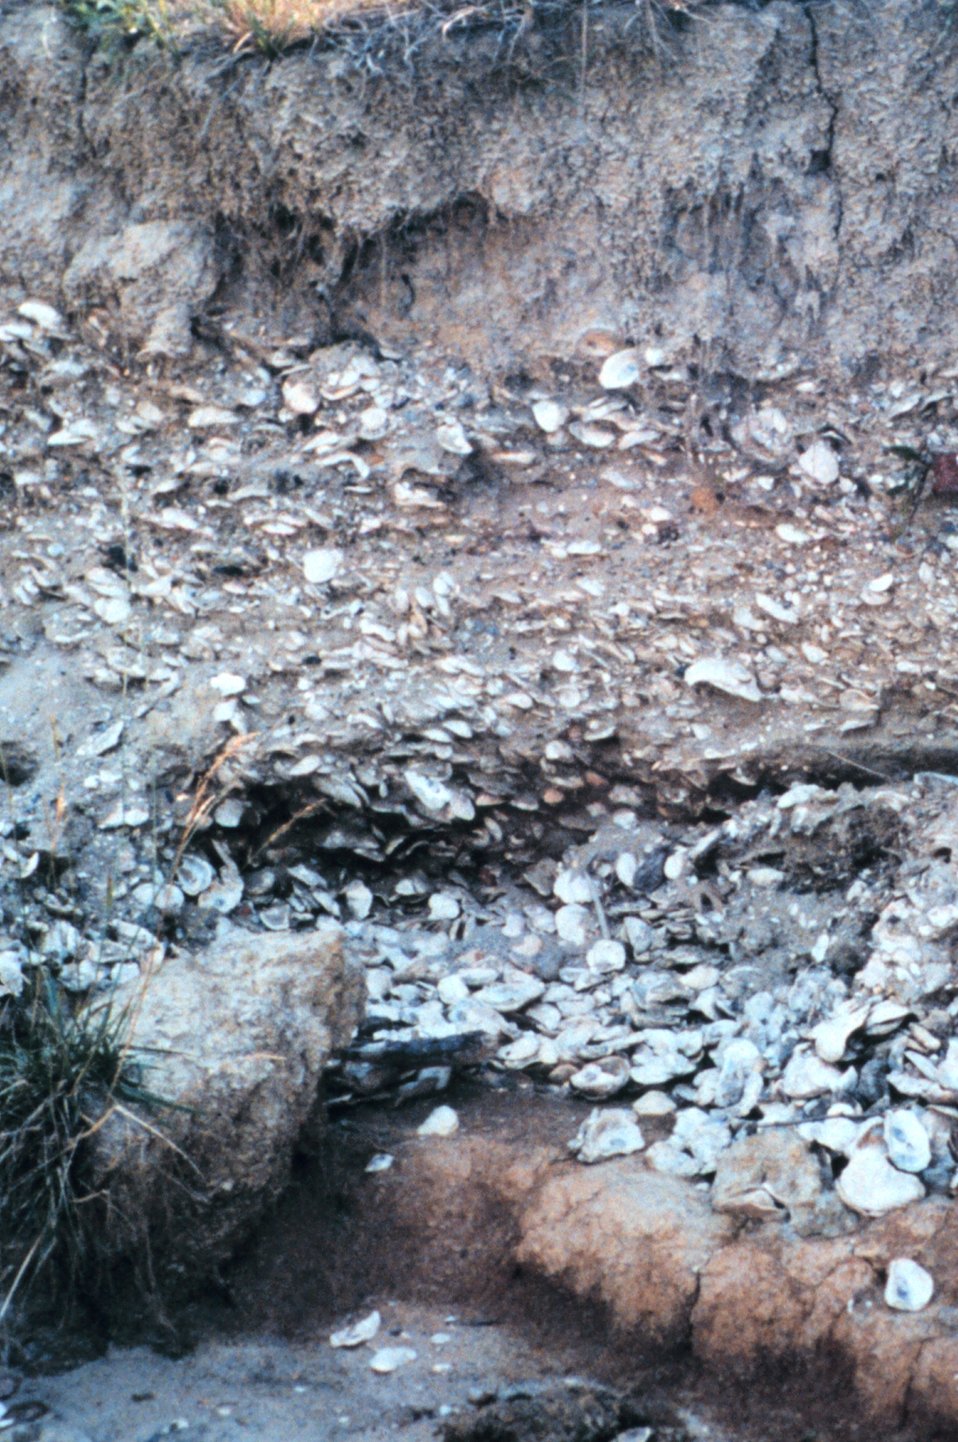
Eroded cliffs along the Tred Avon River reveal buried piles of oyster shells.